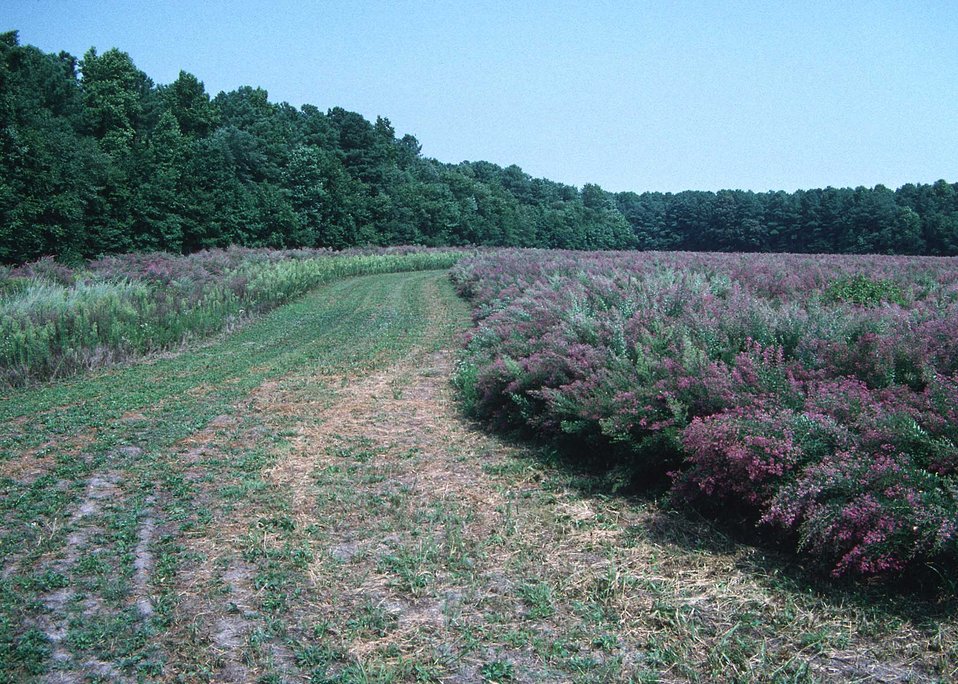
Lespadeedeza as part of buffer strip on a farm in Delaware.